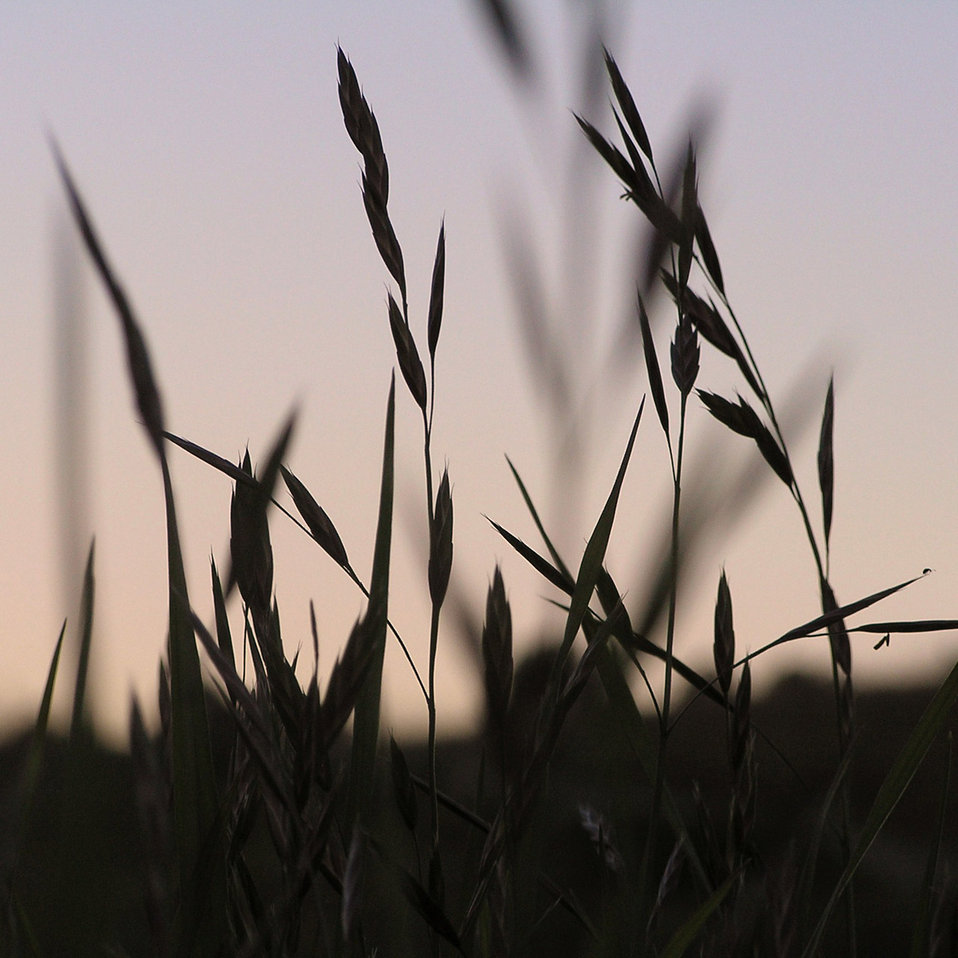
Grass silhouette

Close-up of grass.